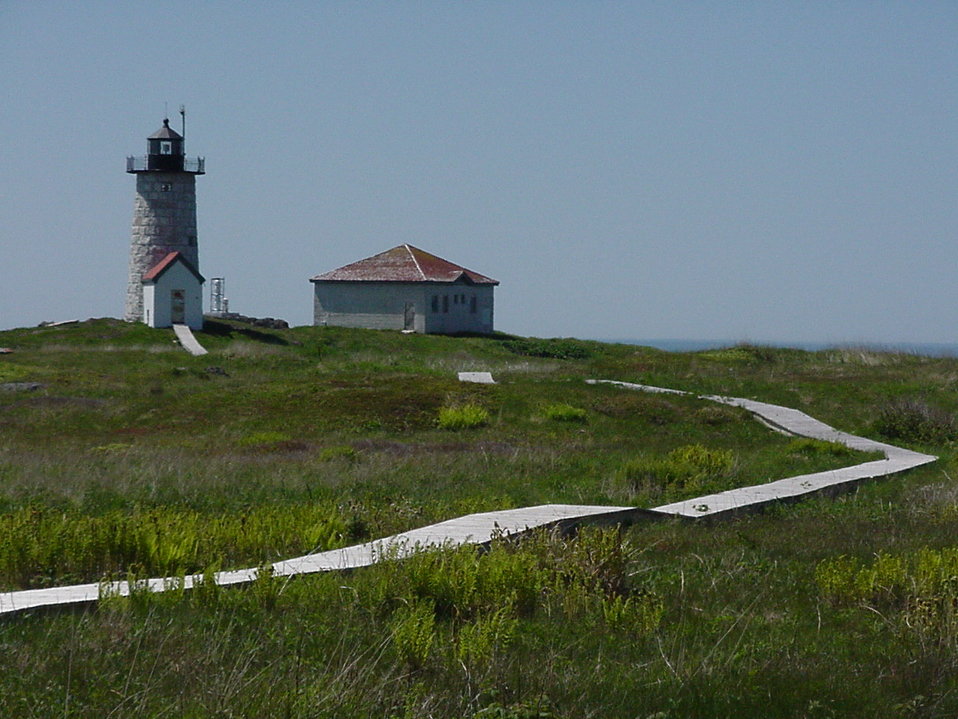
Libby Lighthouse boardwalk at Maine Coastal Island National Wildlife Refuge